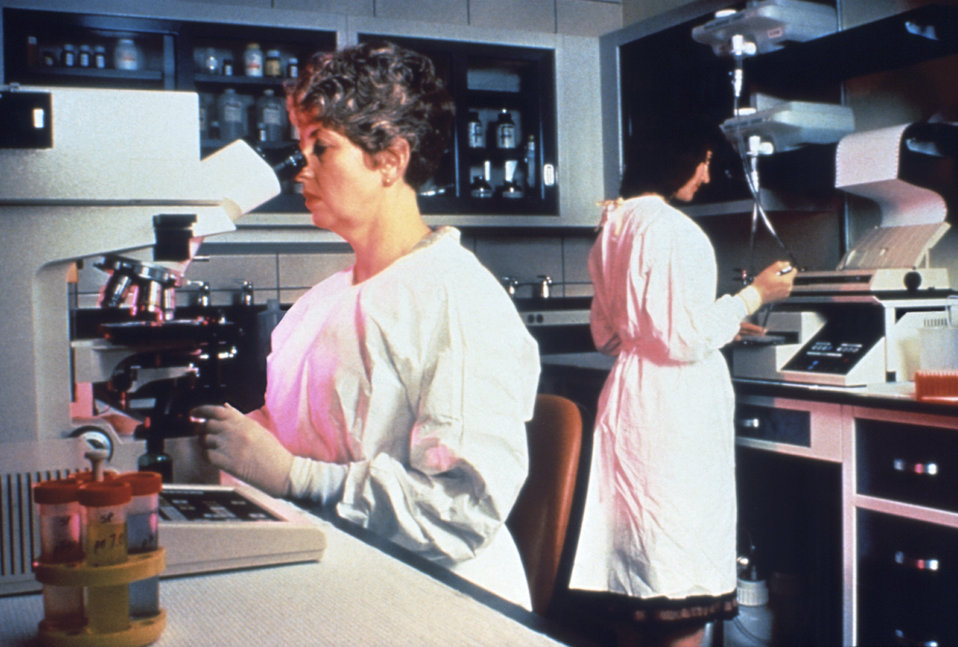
This photograph shows researchers at work in a CDC laboratory identifying the cause of an infectious disease outbreak.